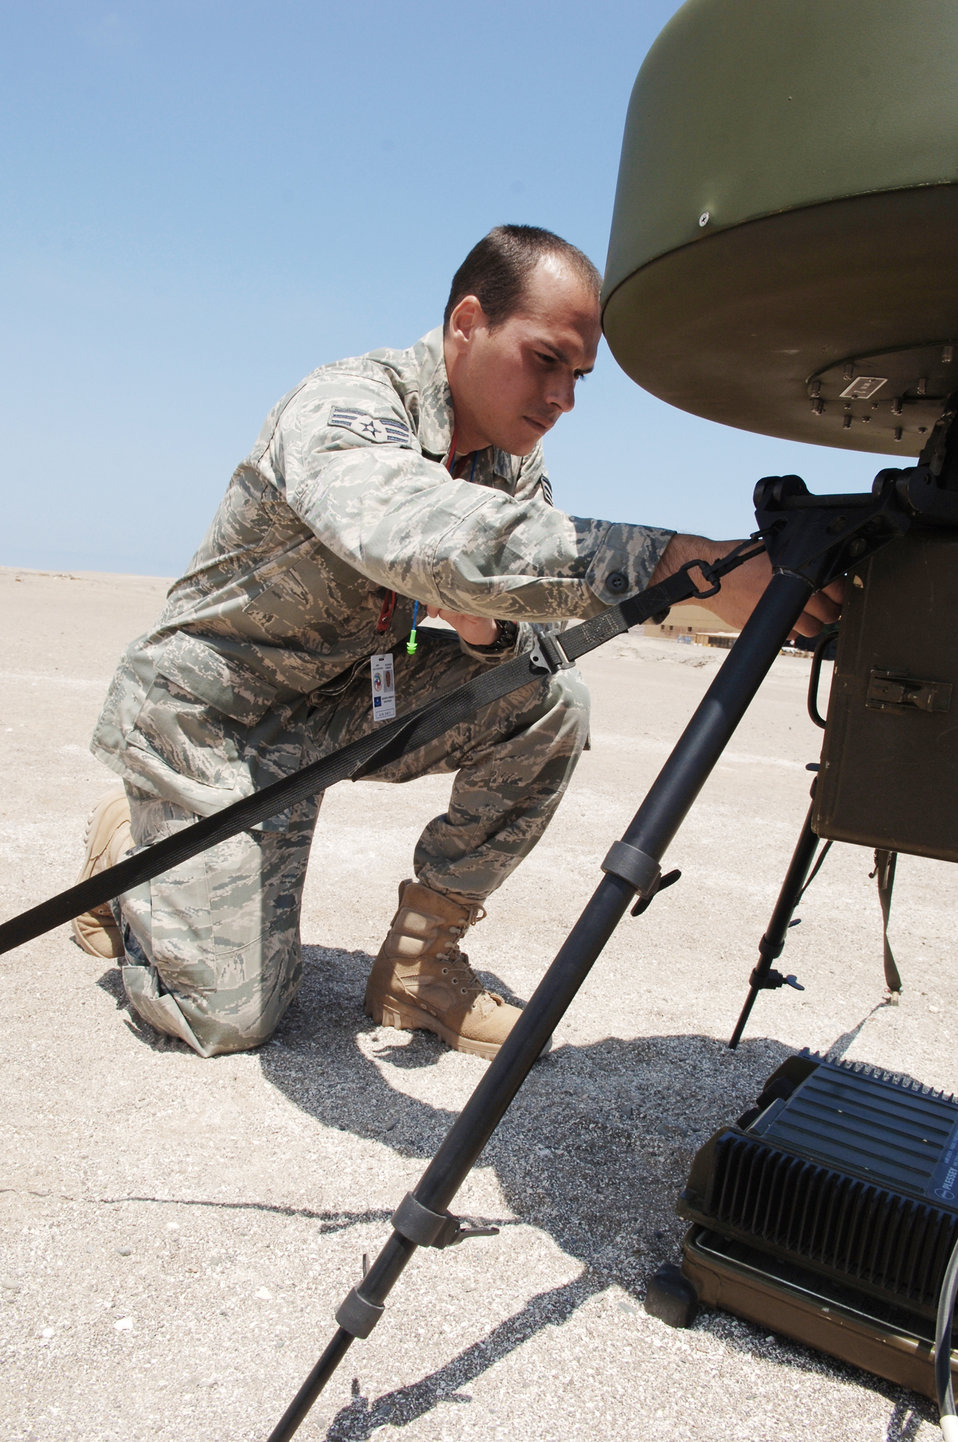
Navigation aids keep F-15s on course

Senior Airman Nelson Santiago performs an hourly check on a portable tactical navigation aid during Exercise Salitre, a Chilean-led multinational exercise focused on interoperability between Chile, the United States, France, Argentina and Brazil Oct. 23, 2009, in Iquique, Chile. The TACAN allows U.S. F-15 Eagle pilots to locate the two operating airfields involved in the exercise and orient themselves for landing. The TACAN is typically used by combat controllers to establish airfields in austere environments. Airman Santiago is a 23rd Special Tactics Squadron airfield systems technician.